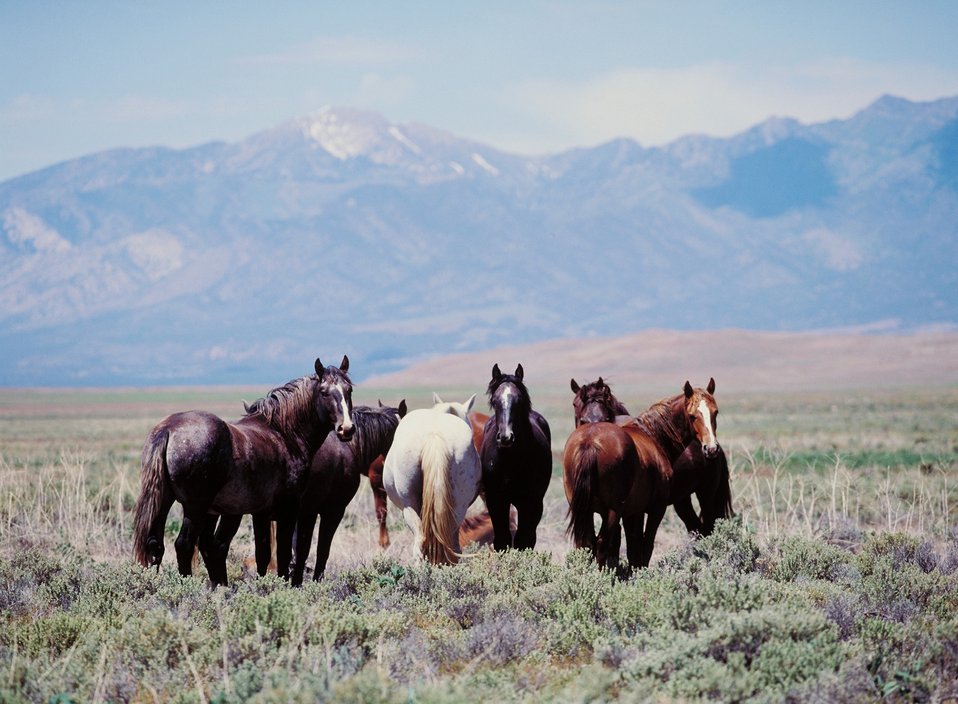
Onaqui Herd near Dugway, Utah.